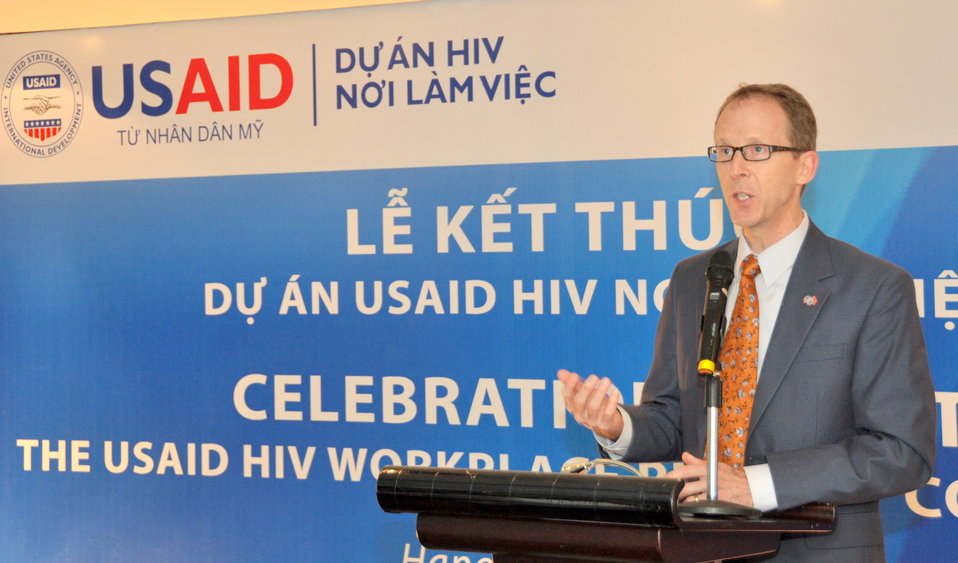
USAID Mission Director Joakim Parker addresses the completion event for the USAID HIV Workplace Project.

Hanoi, June 20, 2013.